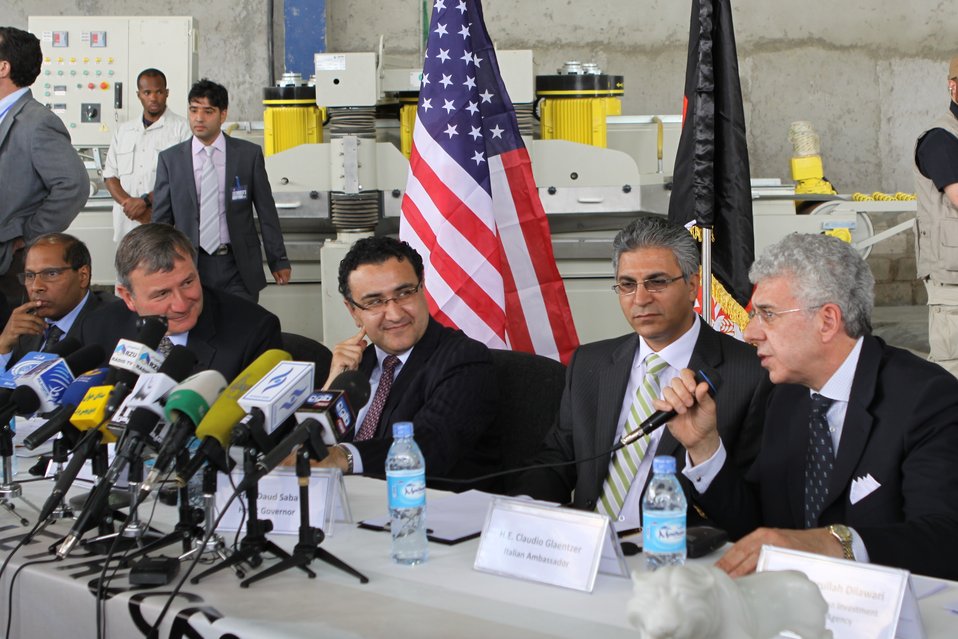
100525 Hirat Marble Conference 345